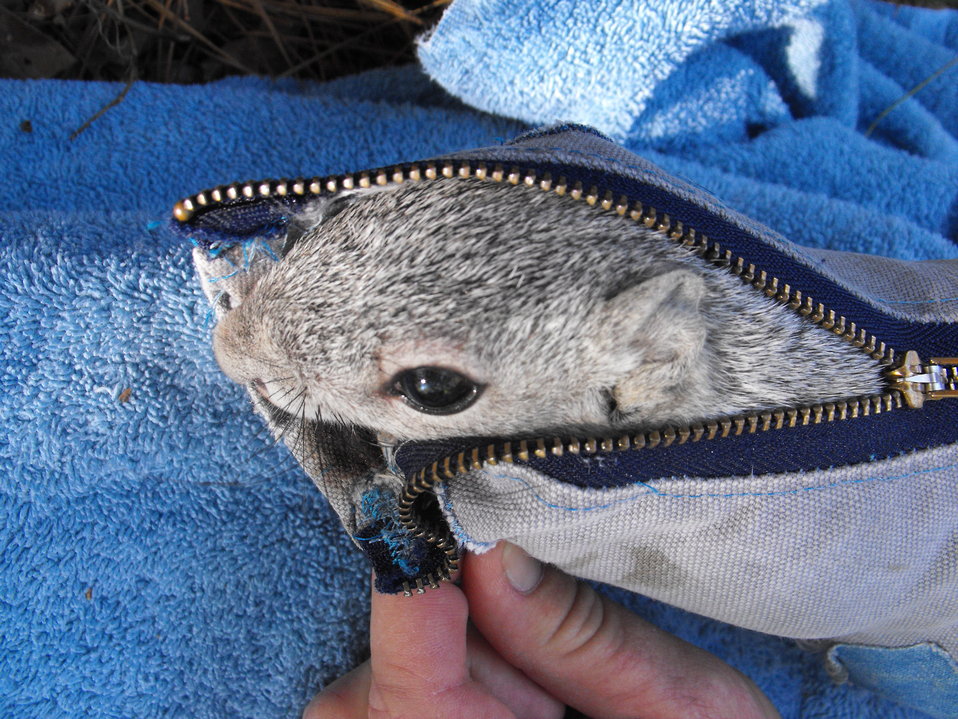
Delmarva peninsula fox squirrel

A Delmarva peninsula fox squirrel in a fabric cone that is used to handle the captured animals during a fox squirrel population survey in November, 2010. The Delmarva peninsula fox squirrel is an endangered species, so biologists conduct population surveys every 2 years to estimate the population on Chincoteague National Wildlife Refuge.